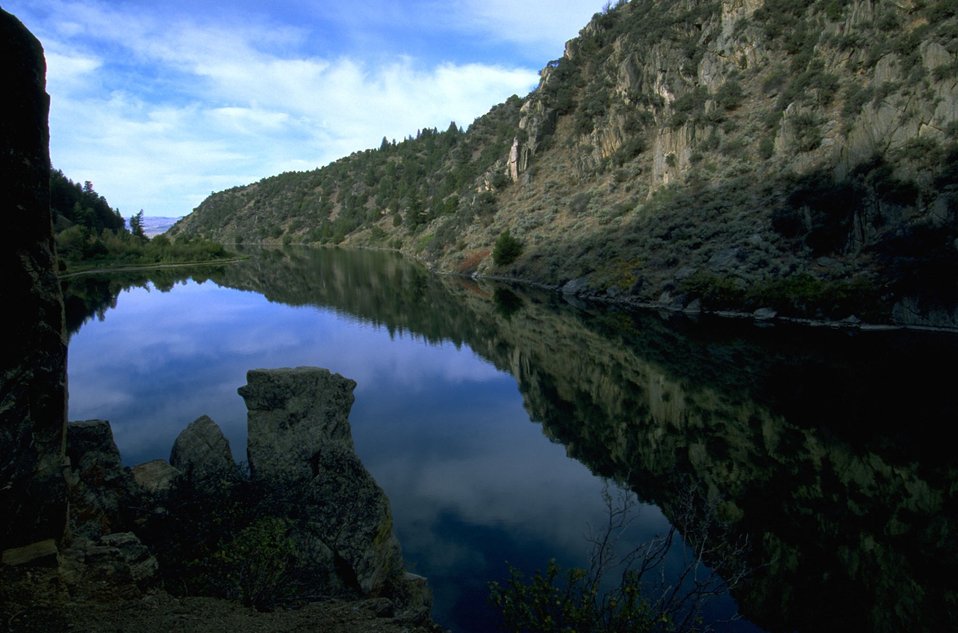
Reflection of sky on water with rock pillar in foreground